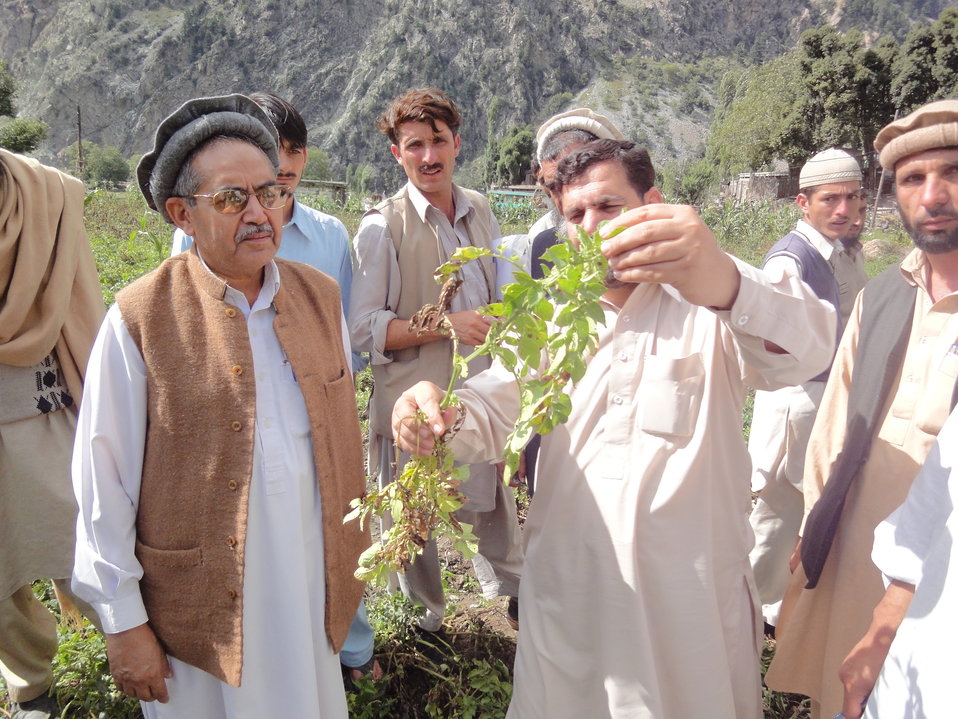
USAID Supports Potato Farmers from Swat - 4